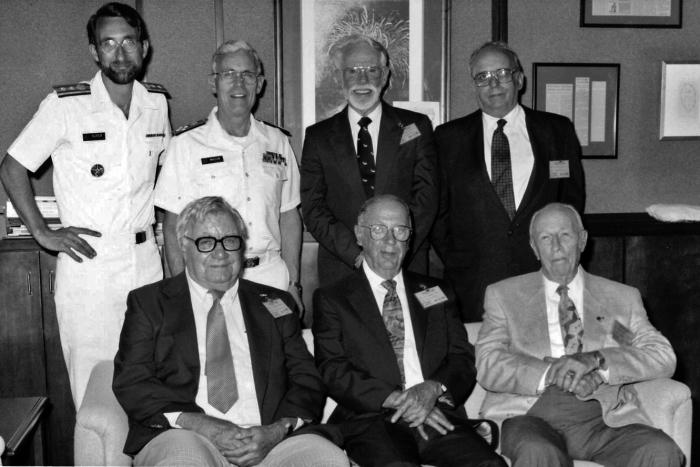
This 1992 photograph, taken during the CDC's 46th anniversary ceremony, features many of the former CDC directors.